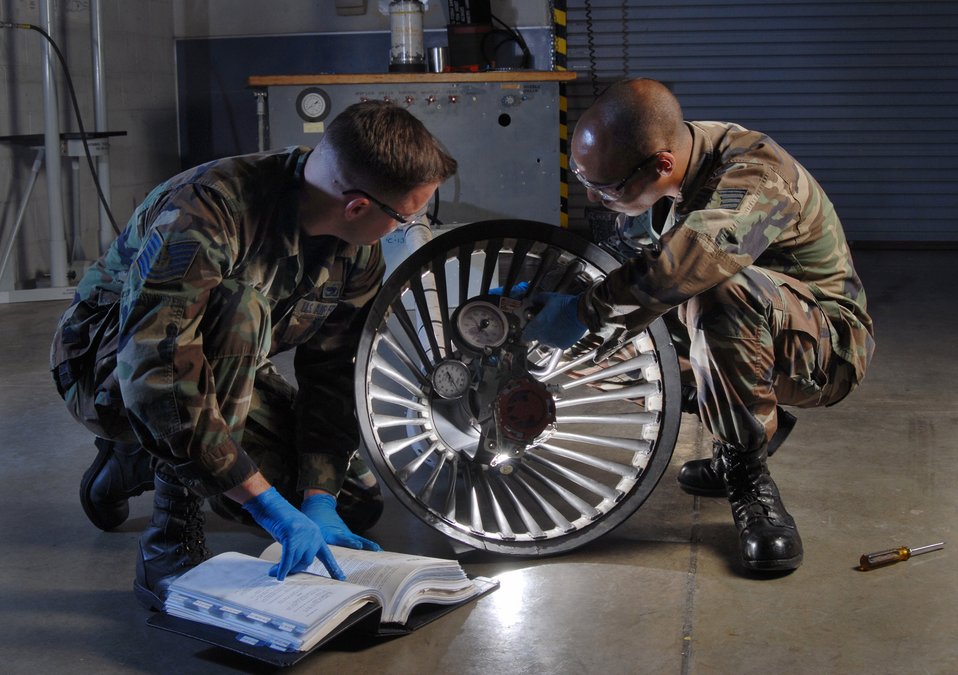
Refueler maintenance

Tech. Sgt. Christopher Walls (left) and Staff Sgt. Chris Wietecha use a breakaway force tester March 25 on a KC-135 Stratotanker aerial refueling drogue. The sergeants are with the 452nd Maintenance Squadron's aircraft pneudraulics systems shop at March Air Reserve Base, Calif. March ARB, located in Southern California, is home to the largest air mobility wing in the Air Force Reserve Command.